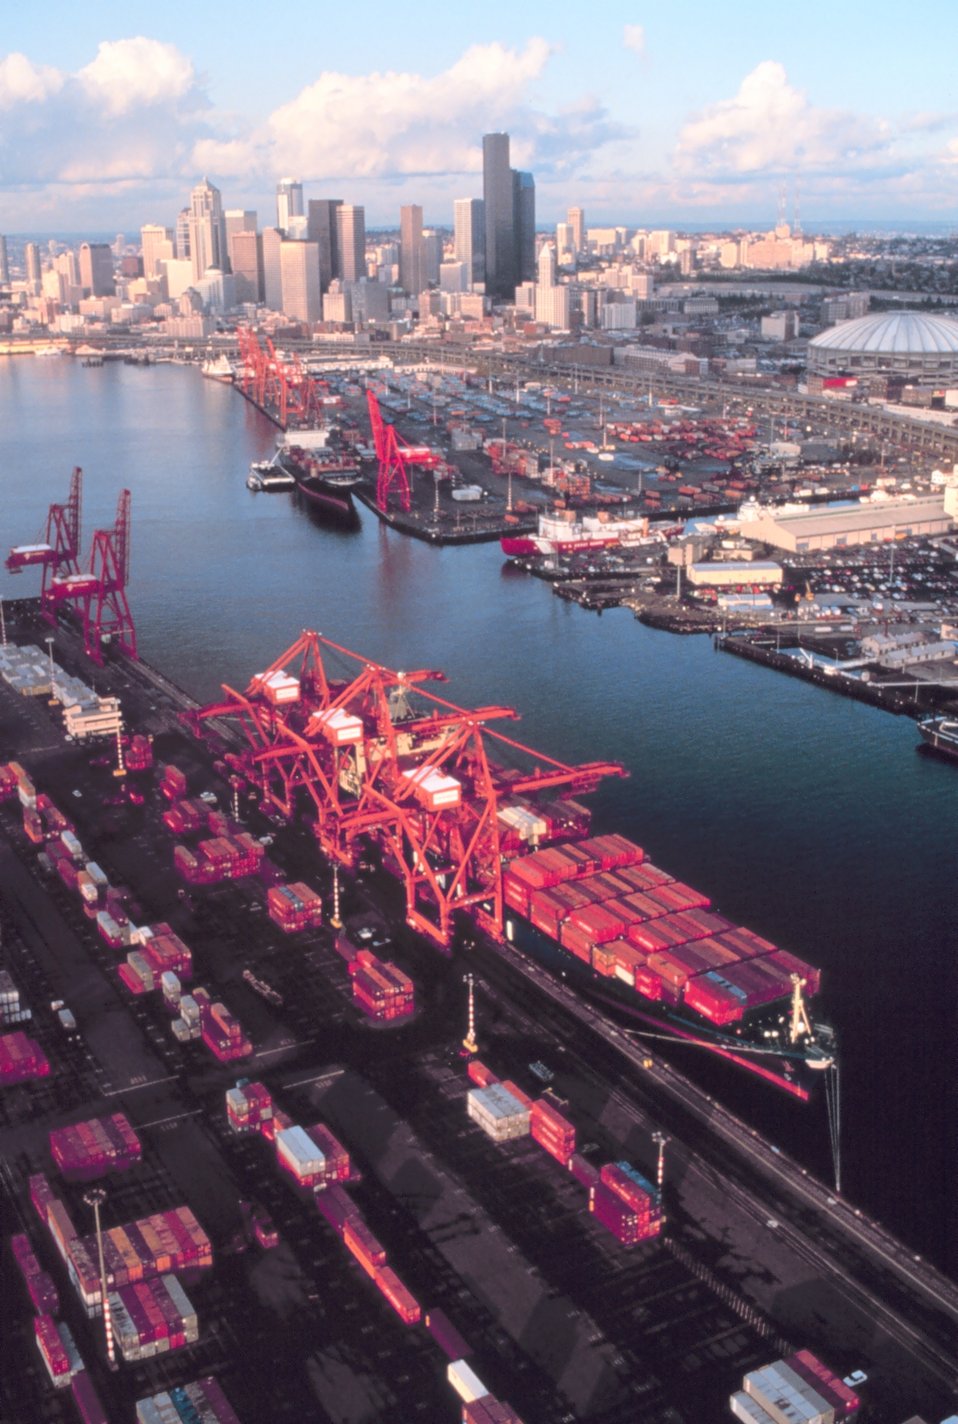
Containership piers in Seattle. Note Coast Guard piers in right center of picture.